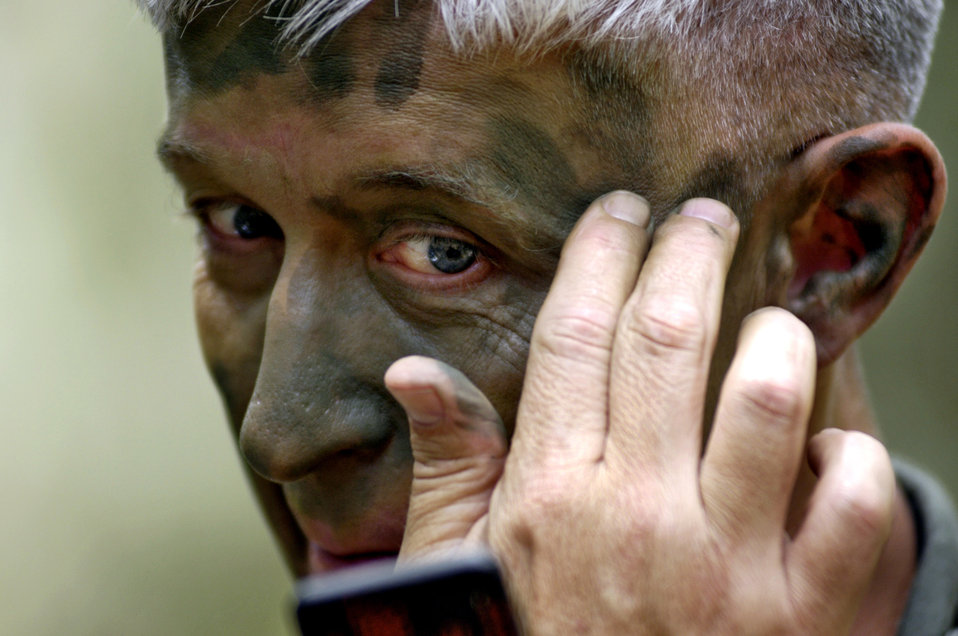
Survival refresher course

Lt. Col. Jimmy Barrow applies grease paint to camouflage his face during a ground survival refresher course at Schofield Barracks, Hawaii, on Thursday, May 4, 2006. The course provides realistic training for aircrew members and concentrates on the principles, techniques and skills necessary to survive in any environment.